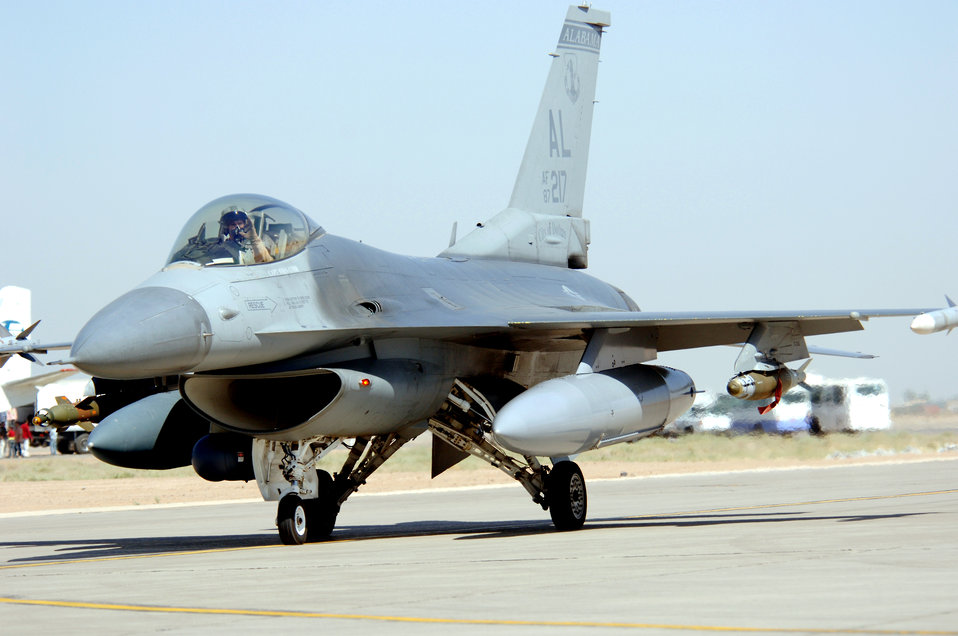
Flying missions support Operation Iraqi Freedom

An F-16 Fighting Falcon taxis at Balad Air Base, Iraq, after an Operation Iraqi Freedom mission on Monday, June 12. The F-16 is deployed from the Alabama Air National Guard's 187th Fighter Wing in Montgomery.